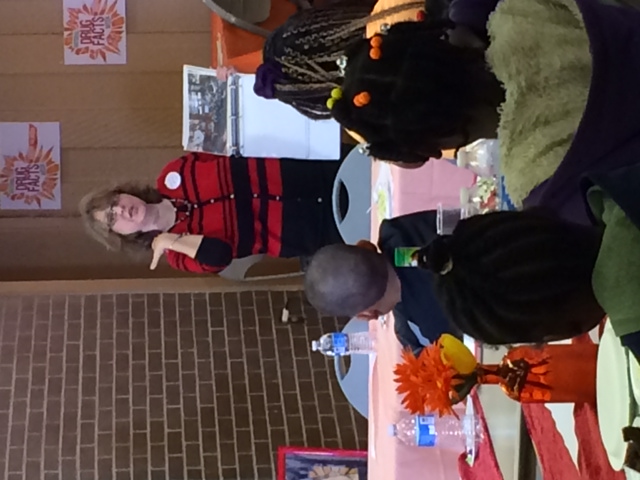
FloridaTeens participate in NDFW

Folks from Orlando, Florida are 'Shattering the Myths' during the 2014 National Drug Facts Week at Orlo Vista Park.c